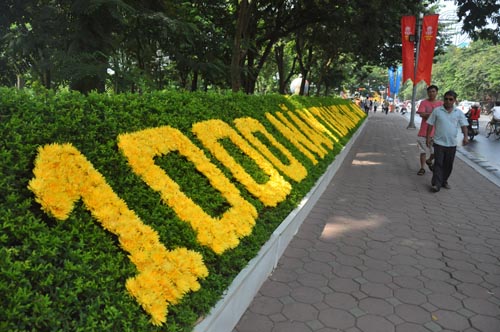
Hanoi celebrates 1,000 years as capital of Vietnam.